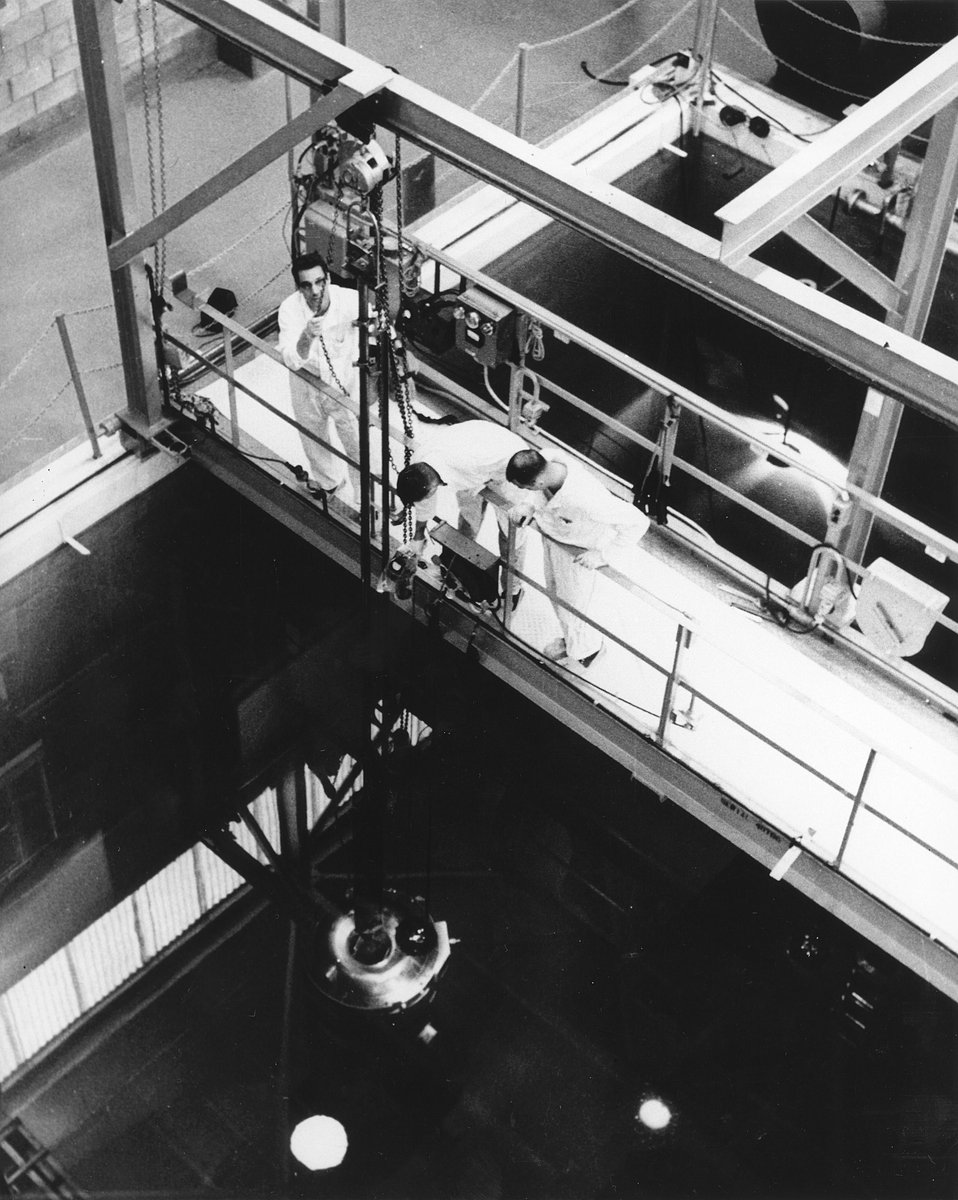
Post-irradiation inspection of Yankee fuel element: Spent fuel element is lifted out of cask under water shield. c. 1964